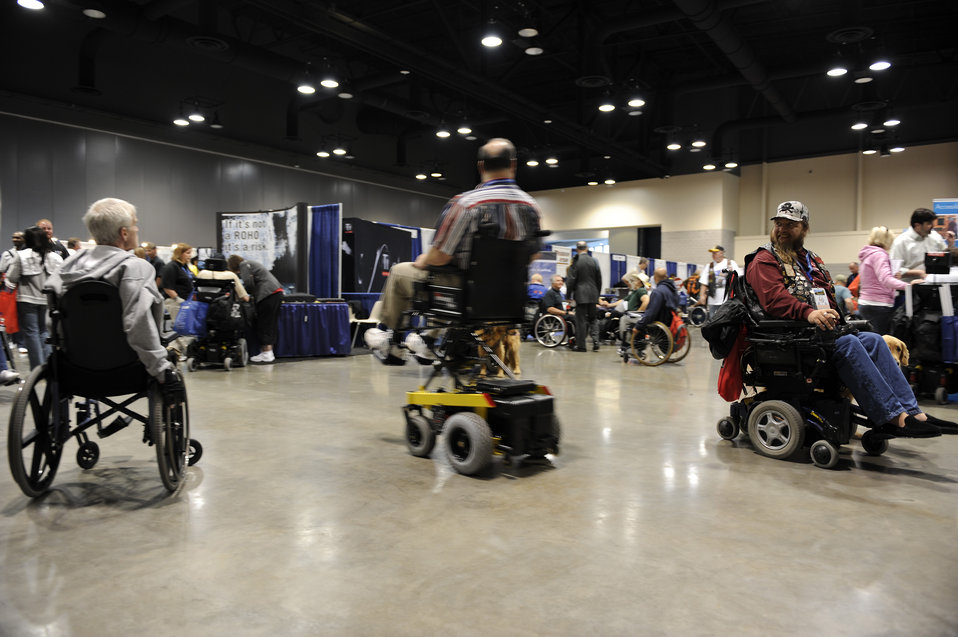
Veterans wheelchair games kick off

Veterans register July 13 before the opening ceremony for the 29th National Veterans Wheelchair Games held in Spokane, Wa. More than 500 veterans meet at the convention center to take part in the 2009 National Veterans Wheelchair Games July 13 through 19.